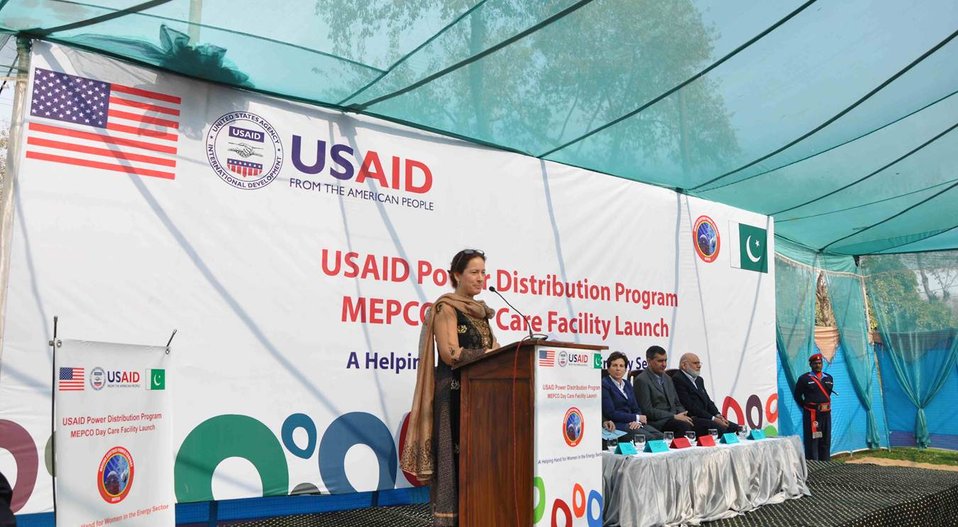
The United States Supports a Day Care Center at MEPCO

“The U.S. government, in collaboration with the government of Pakistan, is working to make the economic hubs of Pakistan as places of opportunity, as places where people can live, work, enjoy, and utilize their full potential. Development does not work if over 50% of the society is excluded” said Ms. Knight. She added, “A reliable child care facility will provide comfort and peace of mind for the working mothers of MEPCO, giving them liberty to continue their jobs and contribute effectively to their organization.”